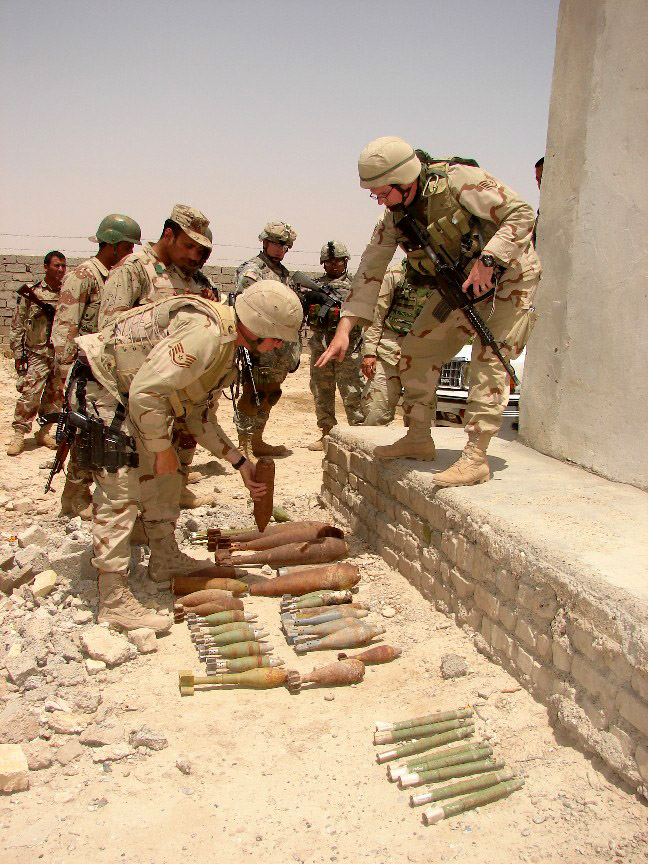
Preparation critical for EOD Airmen

Staff Sgt. Kristoffer Solesbee (right) describes identification features and safety concerns of various unexploded ordnance as Staff Sgt. Christopher Stoup shows the ordnance to Iraqi Army soldiers from the 5th Iraqi Army Bomb Disposal Company March 12 in Iraq.